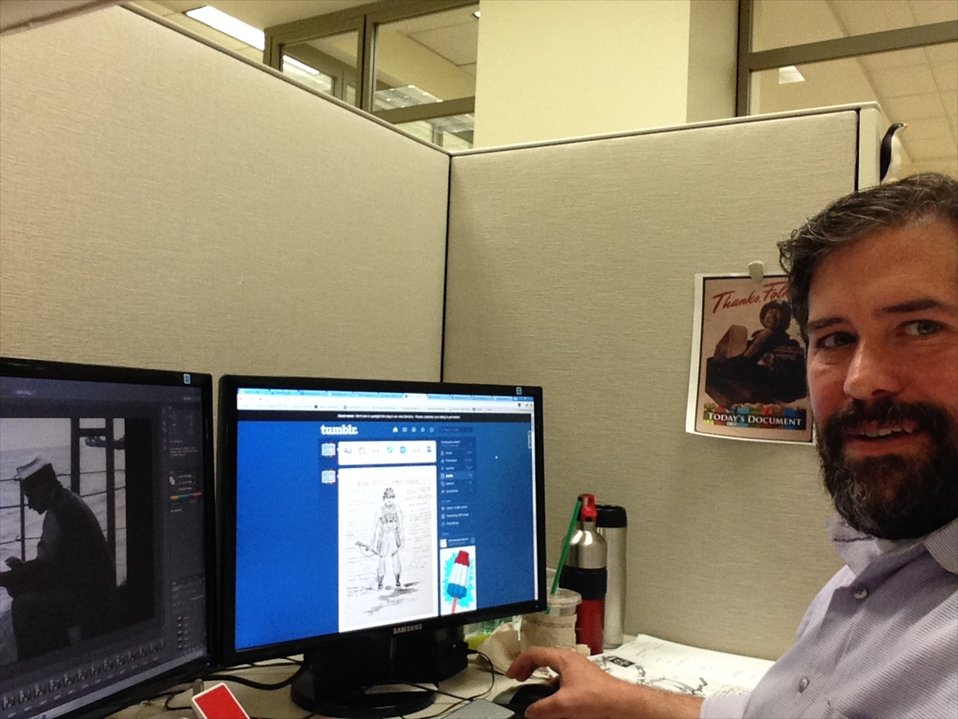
Office of Innovation staff member Darren Cole working on posts for the Today's Document Tumblr account to commemorate the 70th anniversary of D-Day.; Location: Archives 1 - Room G26B, Washington, D.C.